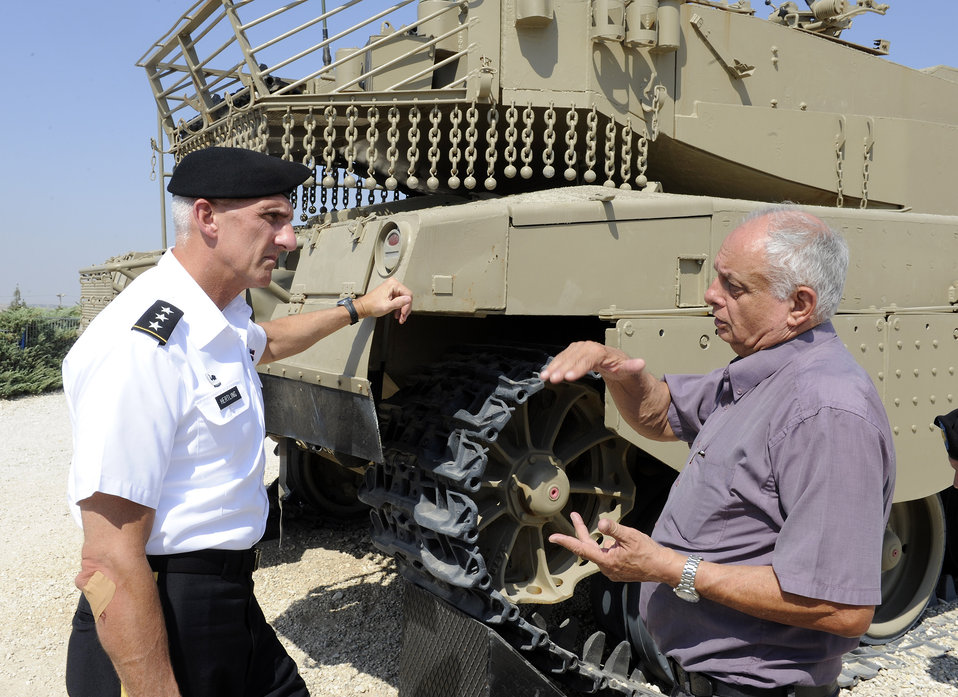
Lieutenant Hertling Tours the Latroun Museum and Grounds in Israel

Lieutenant General Mark P. Hertling, commanding general of the U.S. Army Europe, is guided by Director of the Zvi Meitar Institute for Land Warfare Studies, Gideon Avidor, on a tour of the Latroun Museum and grounds in Latroun, Israel, on August 10, 2011. Lieutenant Hertling met with his Israeli Defense Forces counterpart, Major General Sami Turgeman, to discuss training cooperation between the U.S. and Israeli militaries earlier in the day.